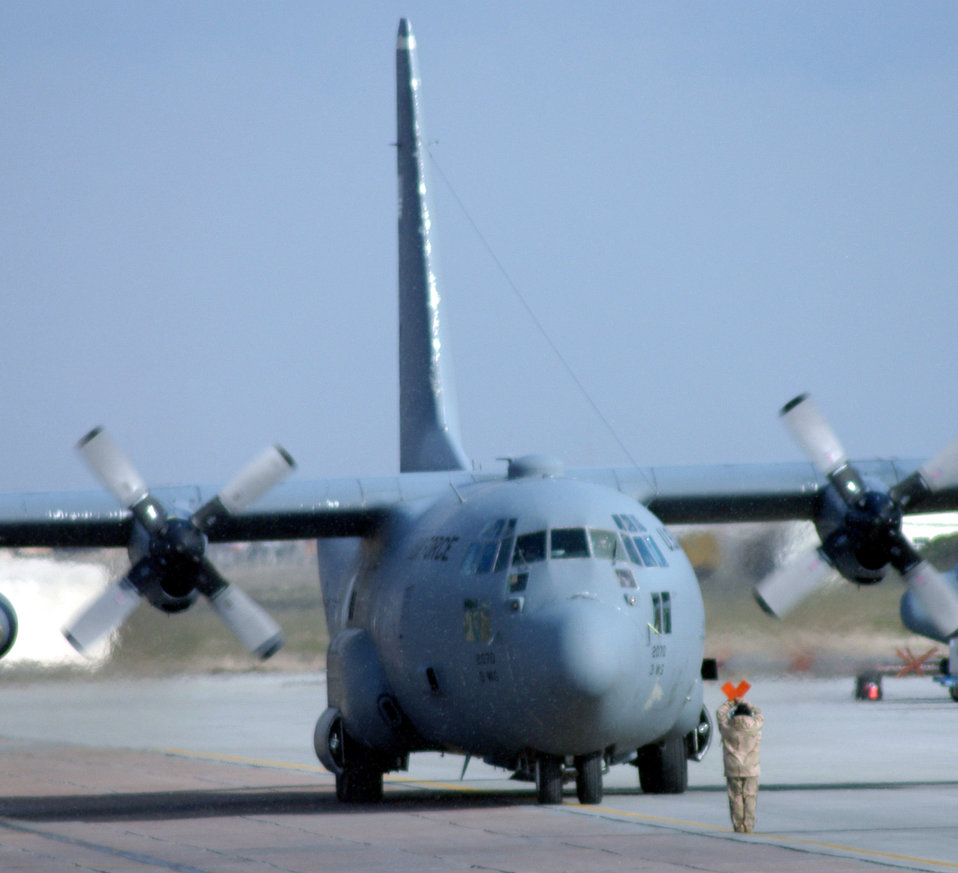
Red light

KARSHI-KHANABAD, Uzbekistan -- A C-130 Hercules comes to a stop at the signal of a maintenance Airman during airfield operations here Jan. 28.